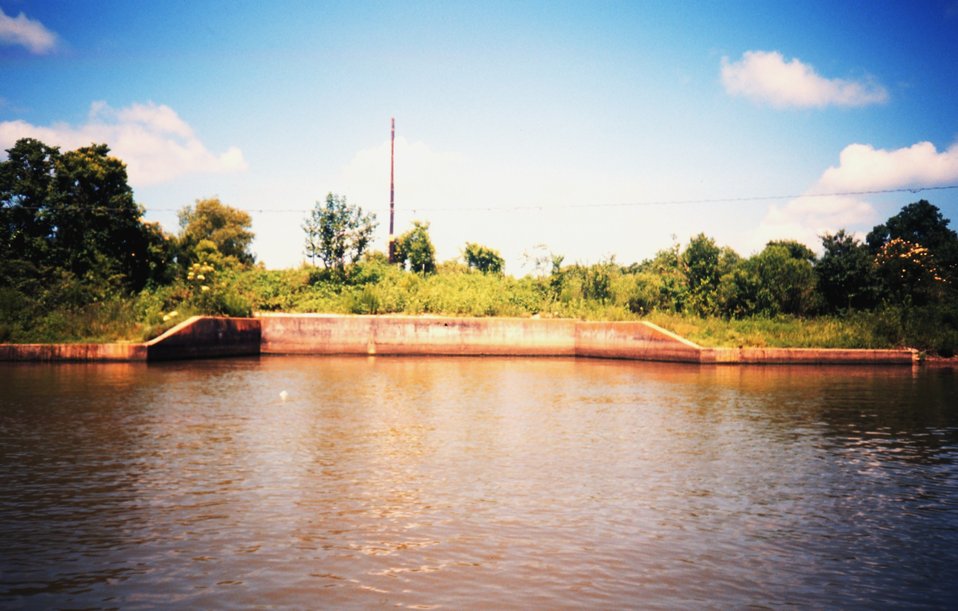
Bayou Lamoque water diversion structure. This is the outflow point where water flows into marsh systems from river sources.